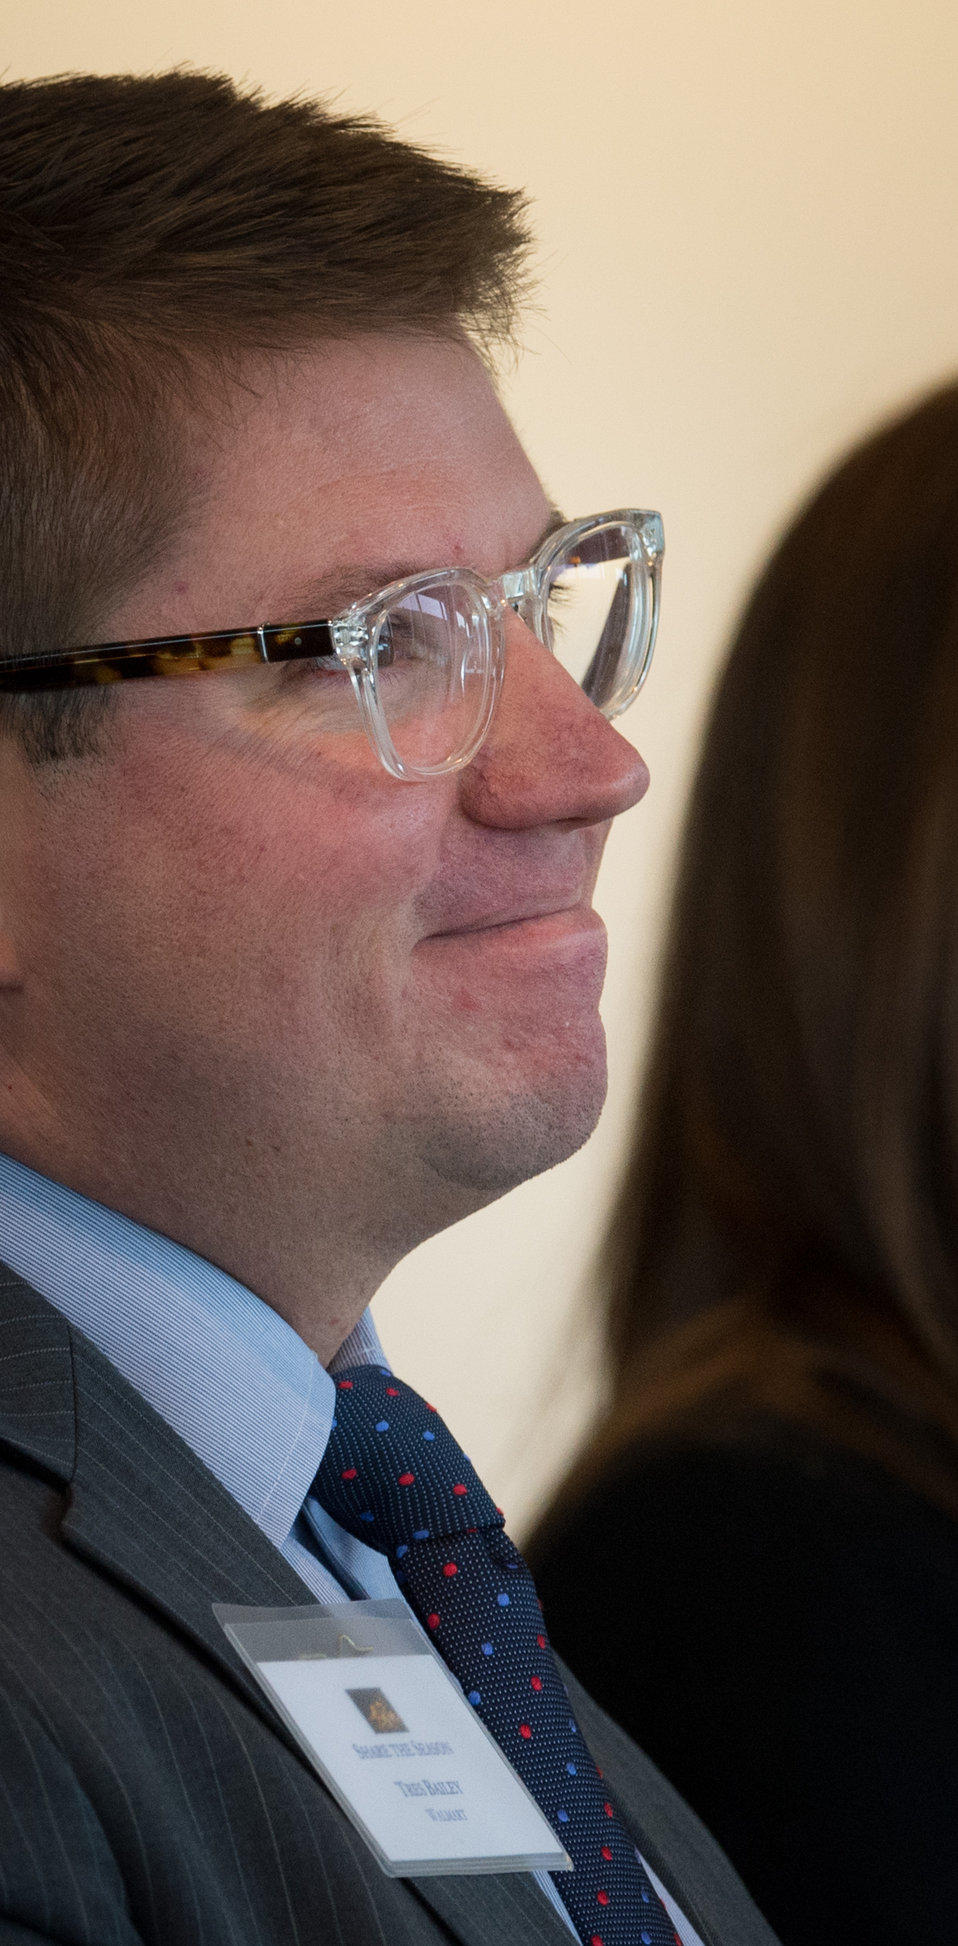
Walmart’s Tres Bailey announced a pound for pound Martha’s Table matching donation challenge to the participants of the Share the Season event organized by the U.S. Department of State Office of the Chief of Protocol Diplomatic Partnership Division and sponsored by Walmart and The Coca-Cola Company held at the Business Roundtable (BRT) in Washington, D.C. on Thursday, Nov. 21, 2013. BRT is a non-profit association of chief executive officers of leading U.S. companies that encourages embassies and diplomats to be active in local community service projects.